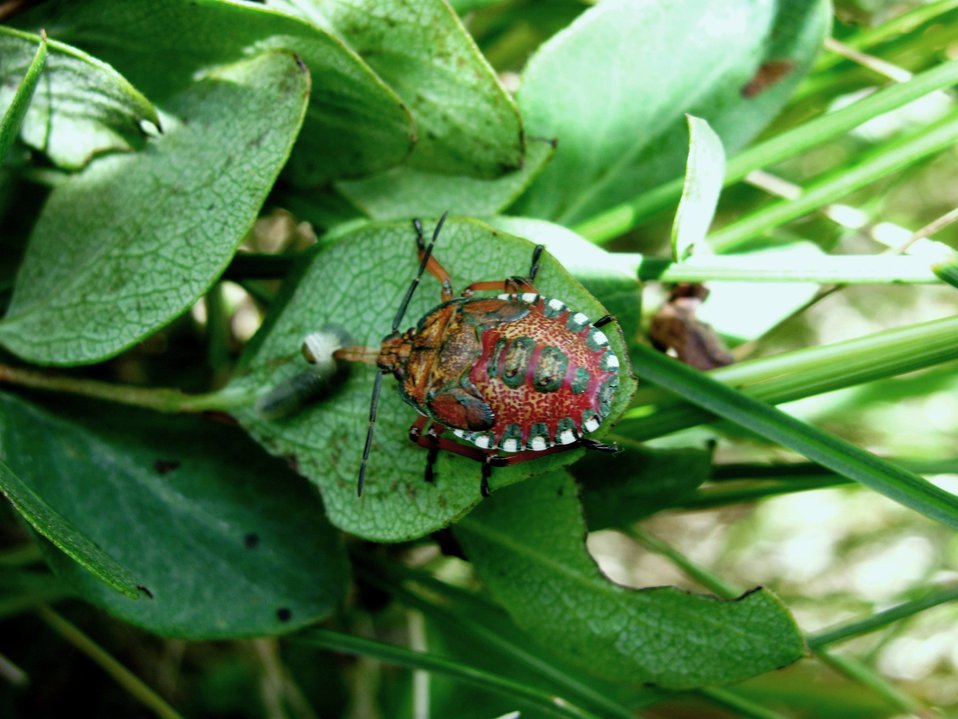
Stink Bug Nymph

Each year the YCC (Youth Conservation Corps) crew and USFWS (U.S. Fish & Wildlife Service) staff conduct photopoints to monitor the Woodworth Station landscape throughout the years.

This year we came across this special insect! Photographed here is a stink bug nymph. If you look close, you can see its beak stuck in a caterpillar (predation). When in the nymph stage, the stink bug is full of vibrant orange and red colors. Unfortunately, those colors will not last. It will soon turn into just a plain brown stink bug.